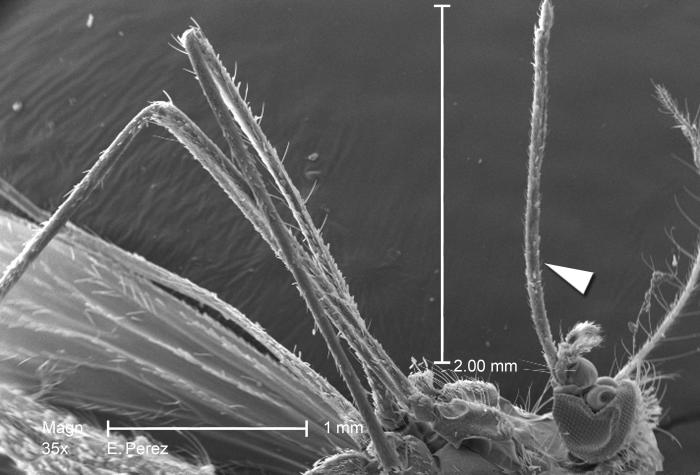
Under a low magnification of 35X, this scanning electron micrograph (SEM) revealed some of the exoskeletal morphology on the surface of an unidentified mosquito found deceased in the suburbs of Decatur, Georgia. An already structurally-frail organism, this insect was discovered in a very dry, dessicated stated, and therefore, was missing a number of its body parts, including parts of its antennae.